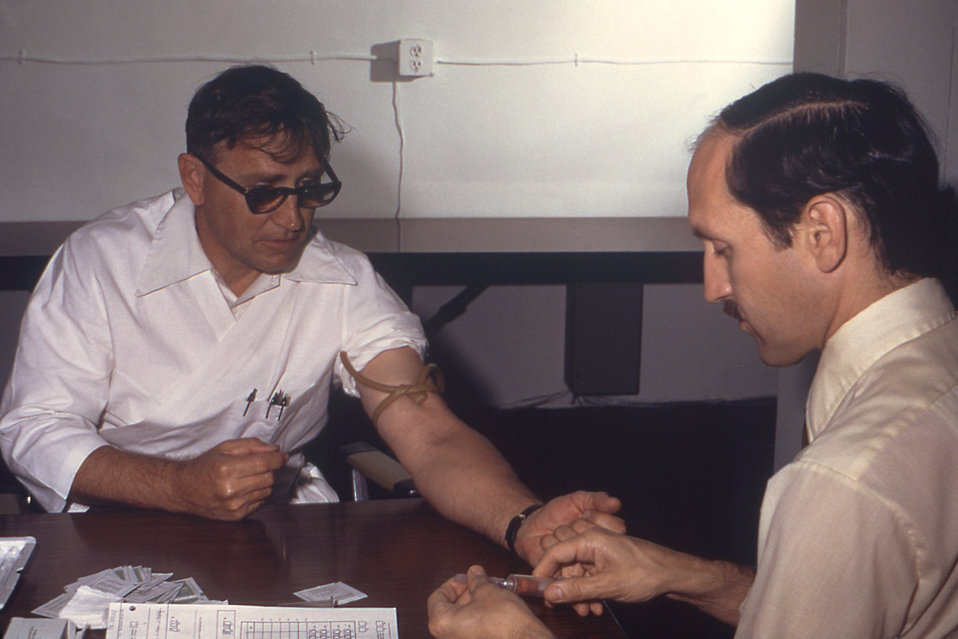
From 1976, this photograph depicted Dr. Gary Noble as he was about to draw a blood sample from a male patient that would be tested for its concentration of influenza antibodies. This image was captured during the National A/New Jersey/76 Influenza Study Program.